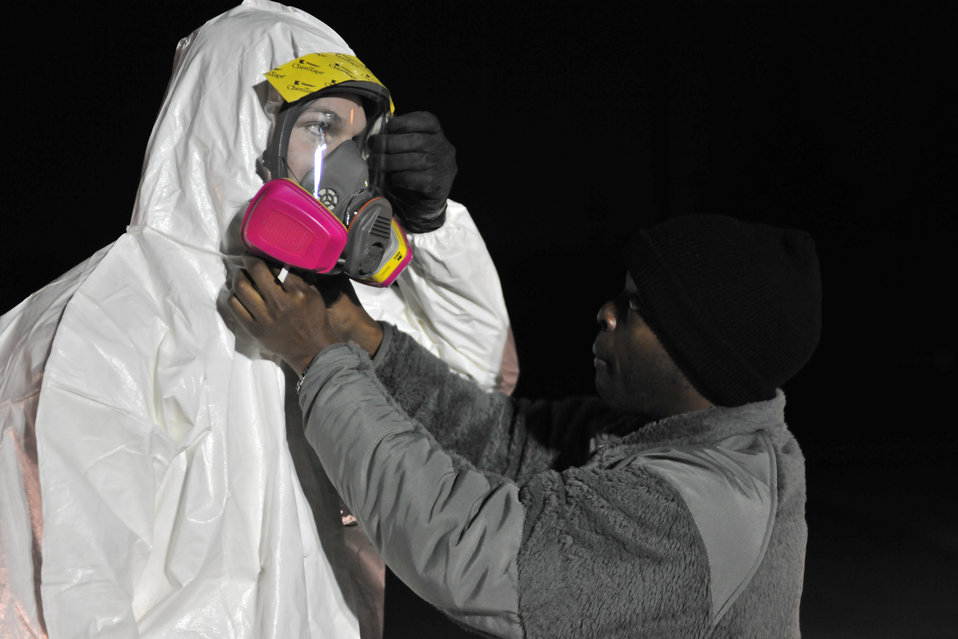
Bioenvironmental techs test for toxins near Tokyo

Capt. Isaiah Manigault assists Staff Sgt. Nicholas Sweetman with his chemical protection suit March 20, 2011, at Kadena Air Base, Japan. Sergeant Sweetman was preparing to scan a convoy returning from an urban search and rescue mission in Myagi, Japan. Captain Manigault is the deputy chief of the 18th Aerospace Medicine Squadron Bioenvironmental Engineering Flight, and Sergeant Sweetman is a technician at the 18th AMDS Bioenvironmental Engineering Flight.